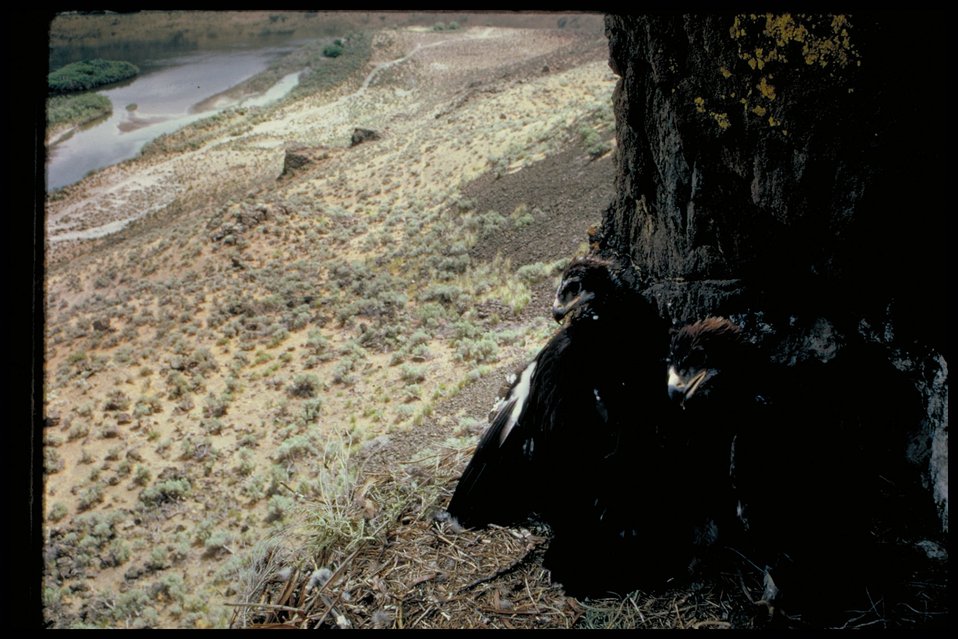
Golden Eagle Birds of Prey National Conservation Area BOP Owyhee Field Office LSRD Lower Snake River District